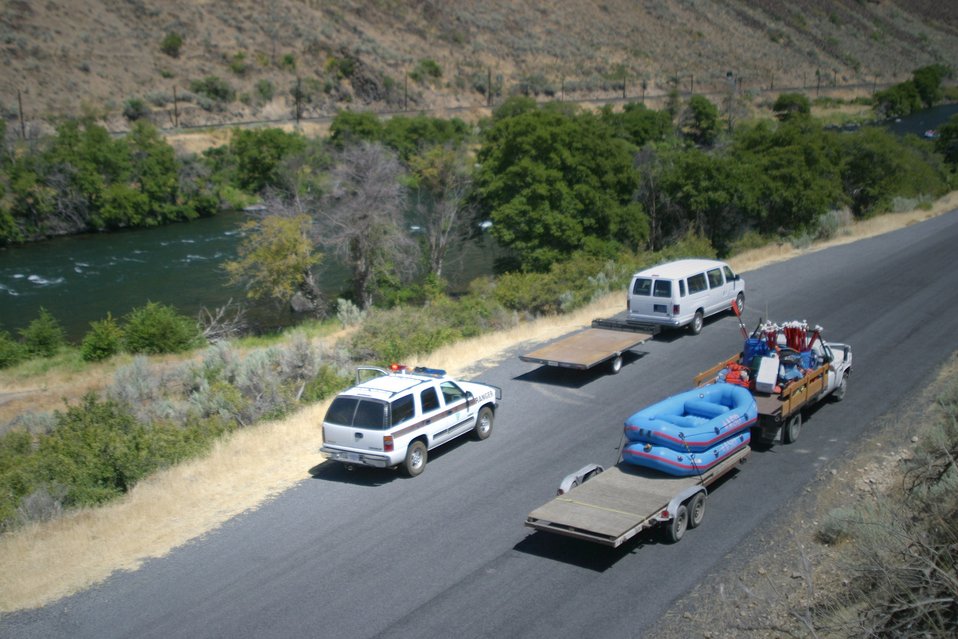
BLM Law Enforcement Rangers patrol the Lower Deschutes river and issue citations when necessary.